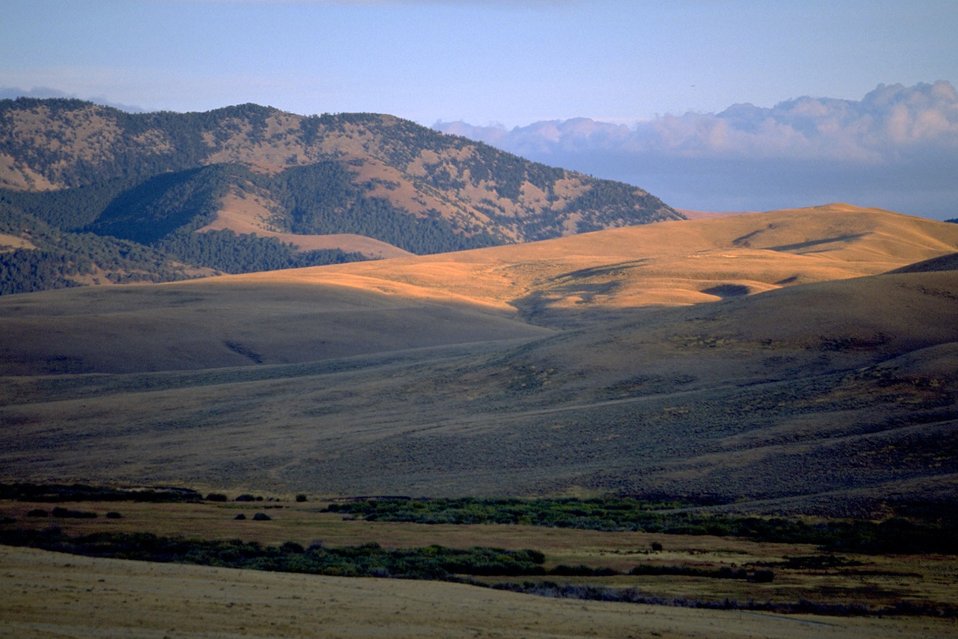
Grassy hillside in partial shade with mountains in the background